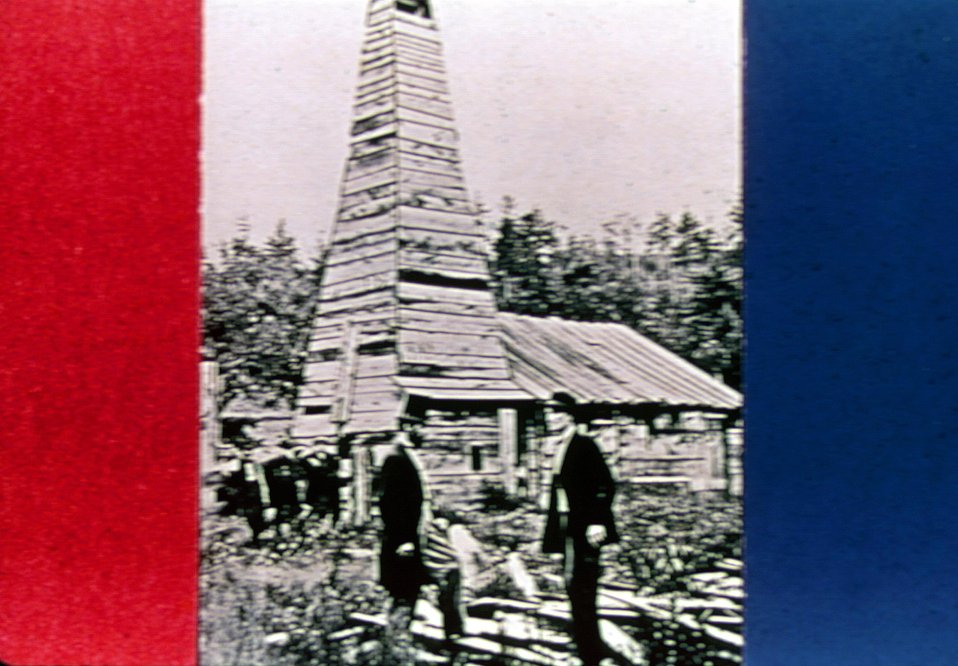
First U.S. Oil Rig. c. undated